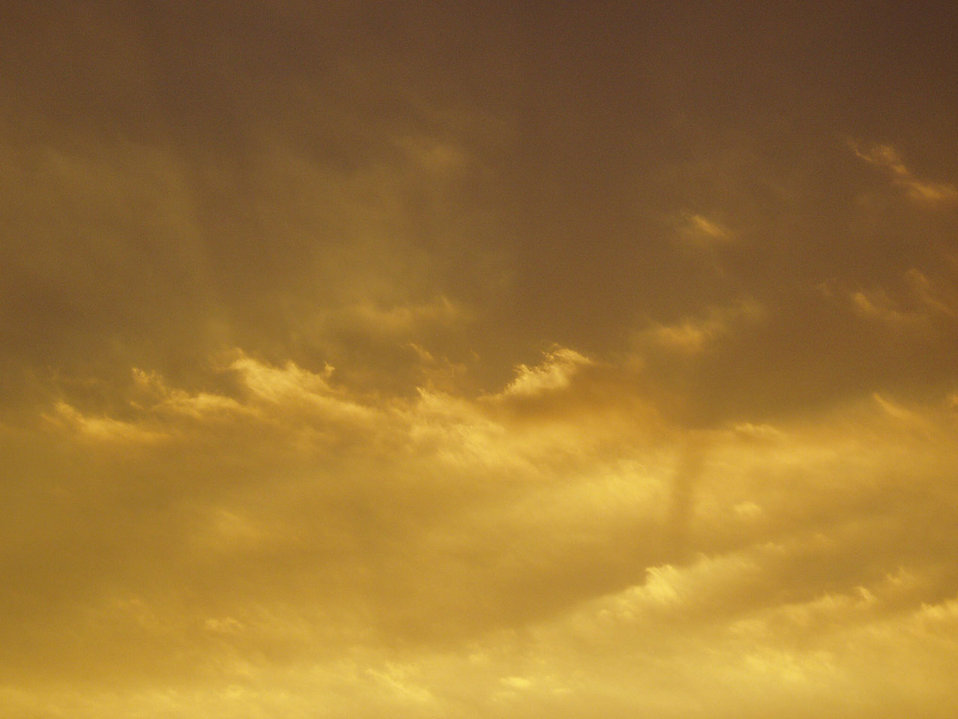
Sunset sky

Evening sky over the mississagi lighthouse campsite, manitoulin island, ontario.